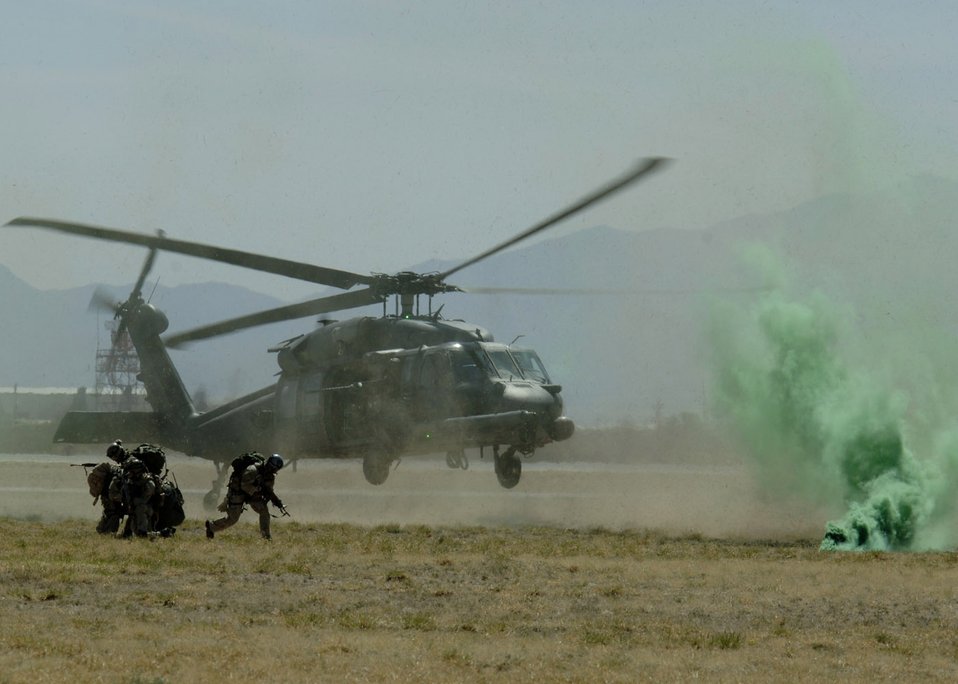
Pararescuemen show their stuff

Pararescuemen from the 48th Rescue Squadron prepare to be picked up by an HH-60 Pave Hawk helicopter as part of a combat search and rescue demonstration March 18 during the 2007 Aerospace and Arizona Days air show at Davis-Monthan Air Force Base, Ariz.